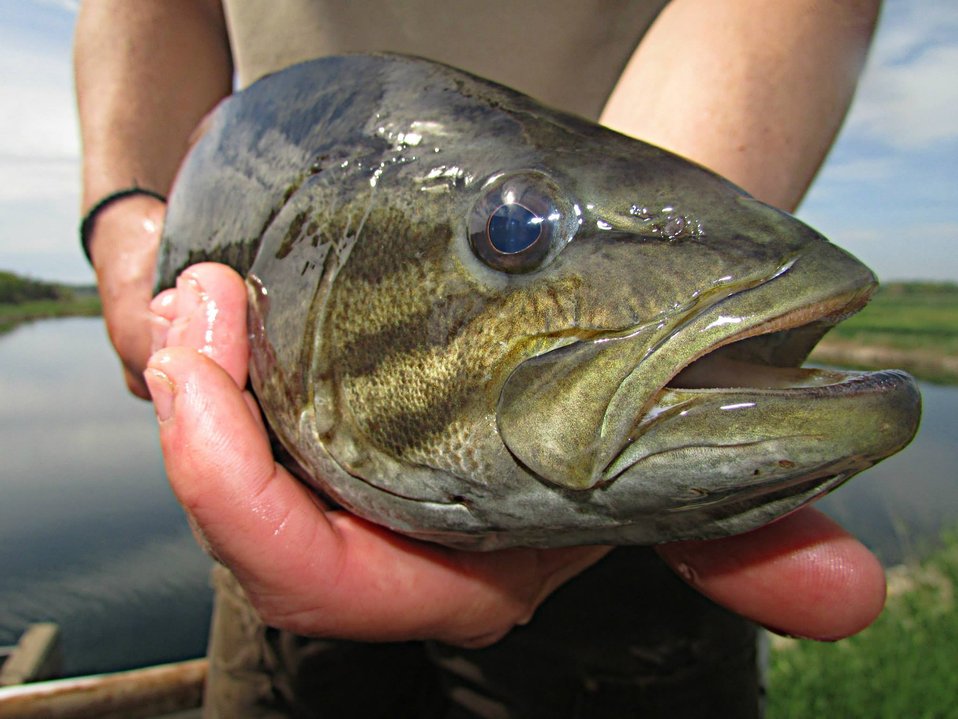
Bronzeback

Who can identify this beauty?

Today we separated our males and females in preparation for spawning.